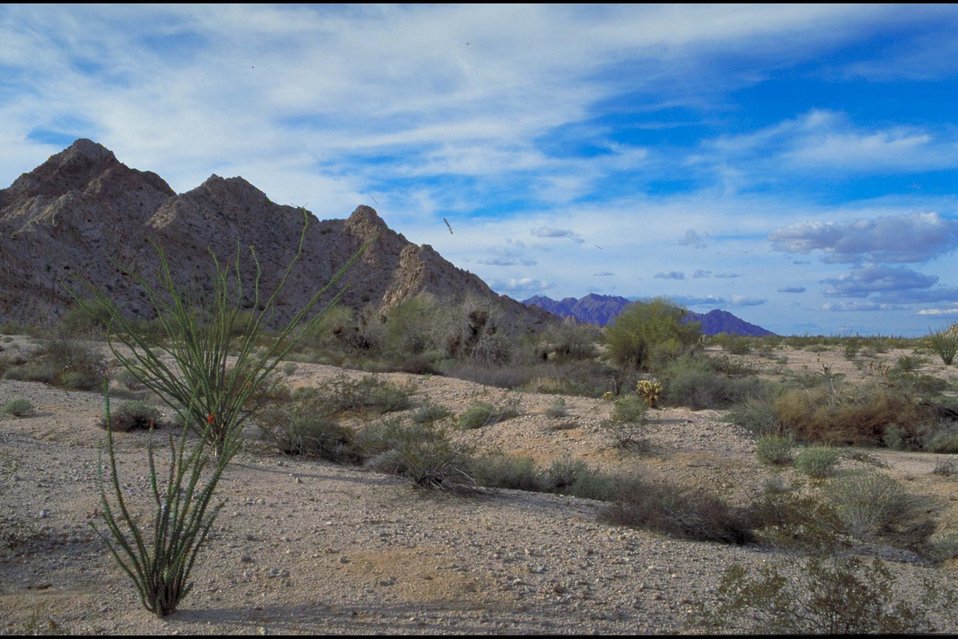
Beautifual Arizona desert